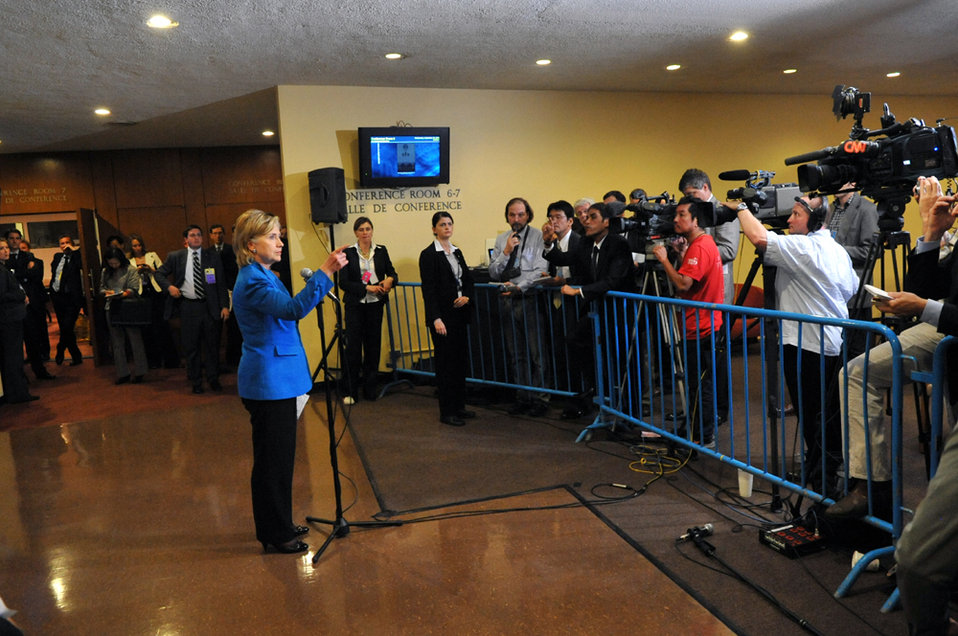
UNGA 2009: P5 1 Meeting

U.S. Secretary of State Hillary Rodham Clinton addresses the press following of a P5 1 meeting at the UN headquarters during the 64th Session of the UN General Assembly in New York City, New York September 23, 2009.